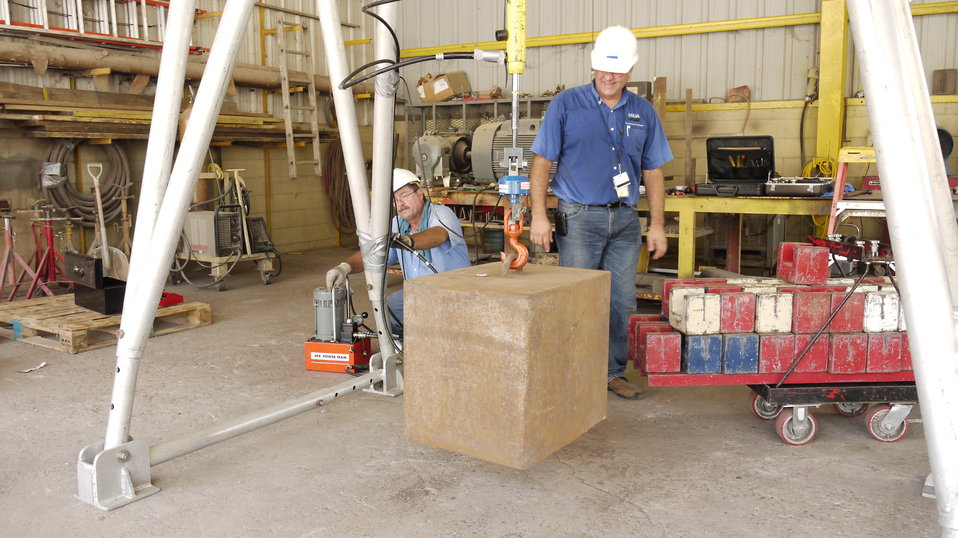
U.S. Department of Agriculture’s (USDA) Grain Inspection, Packers, and Stockyard Administration (GIPSA) industrial specialists Gerald Raymond and Troy Kramer calibrate the elevator owned test weight standards on site. These standards are used to test the accuracy of the elevator hopper scales. USDA GIPSA provides official testing of Automatic Bulk Weighing (Hopper) scales used in official certification of grain weight.